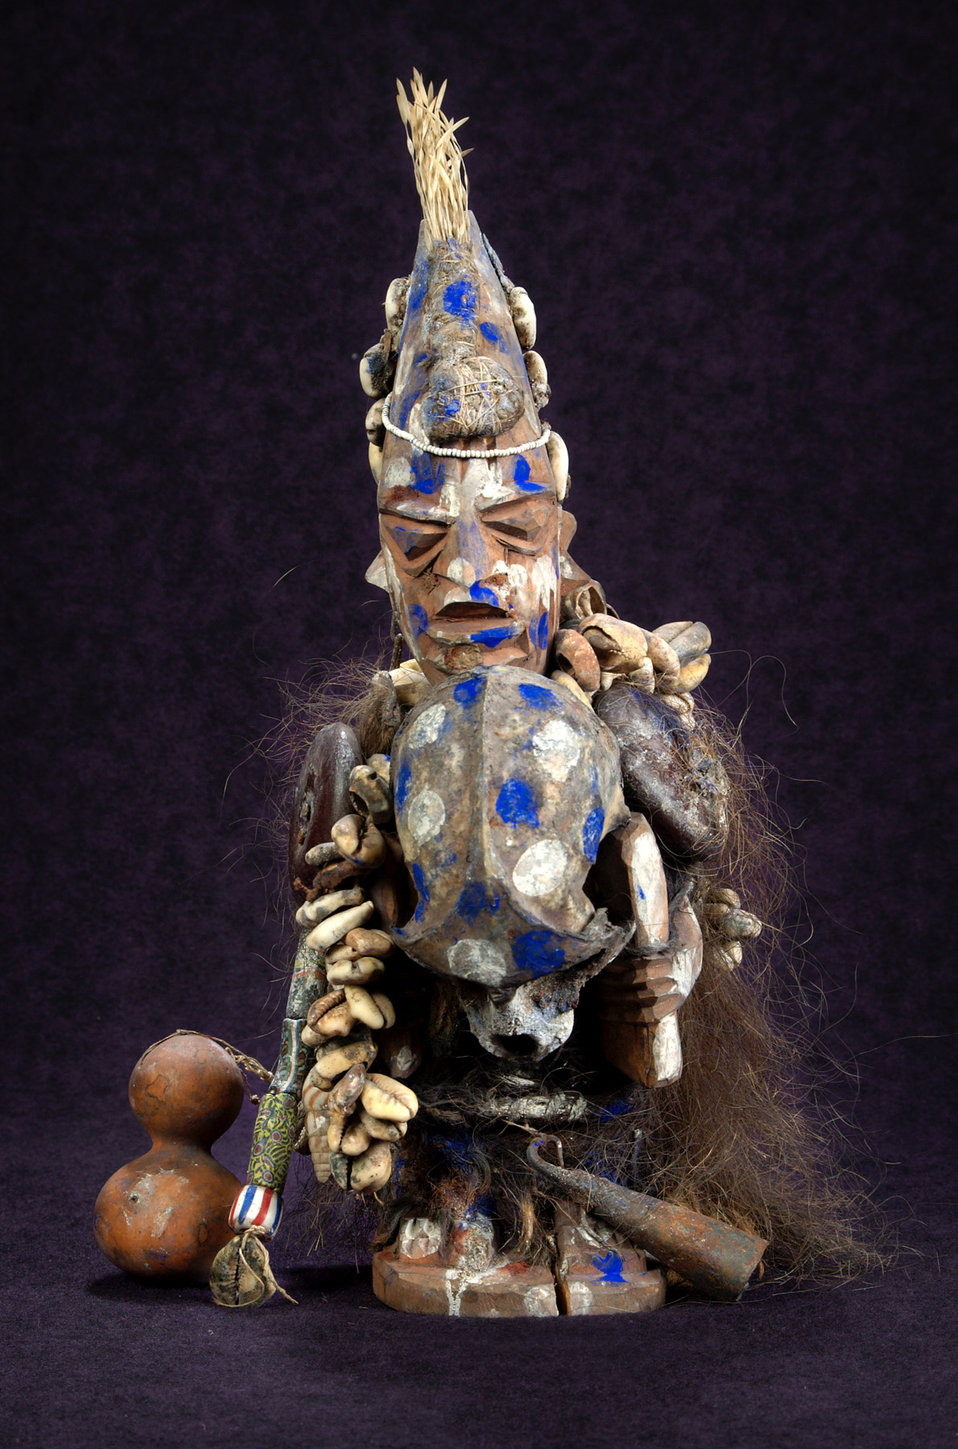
This is a statue of Shapona, the West African God of Smallpox. It is part of the CDC's Global Health Odyssey (GHO) collection of artifacts. A uniquely carved wooden figure, it is adorned with layers of meaningful objects such as monkey skulls, cowrie shells, and nails. Donated in 1995 by Ilze and Rafe Henderson, it was created by a traditional healer who made approximately 50 Shaponas as commemorative objects for the CDC, WHO, and other public health experts attending a 1969 conference on smallpox eradication